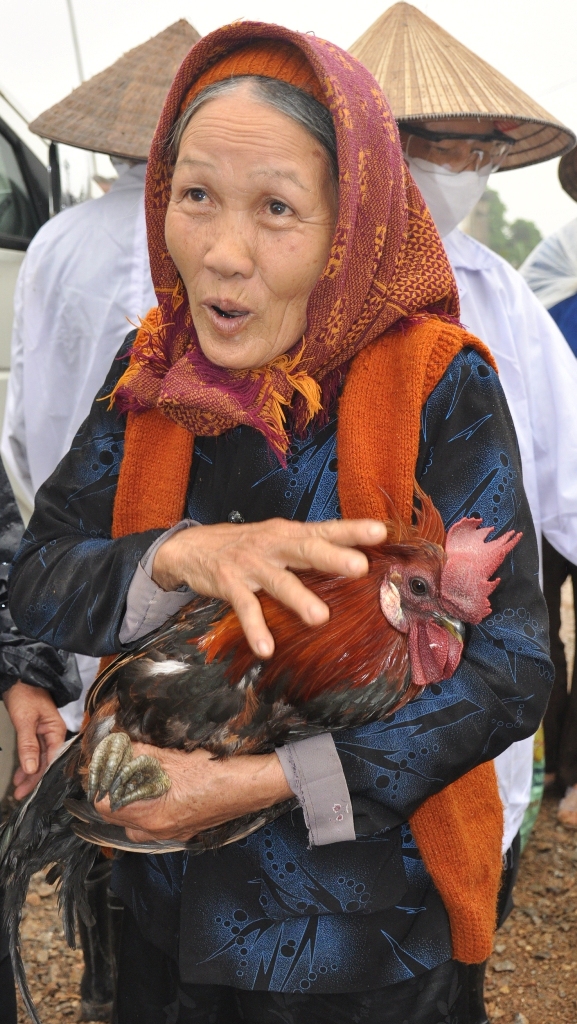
USAID helps local authorities combat bird flu from rural communities to markets throughout Vietnam

A woman in Ha Nam province brings her chicken to be vaccinated. USAID and its partners works closely with local authorities and animal health workers to promote best practices to combat the spread of disease. Vietnam is recognized for its response to bird flu in particular since 2004.